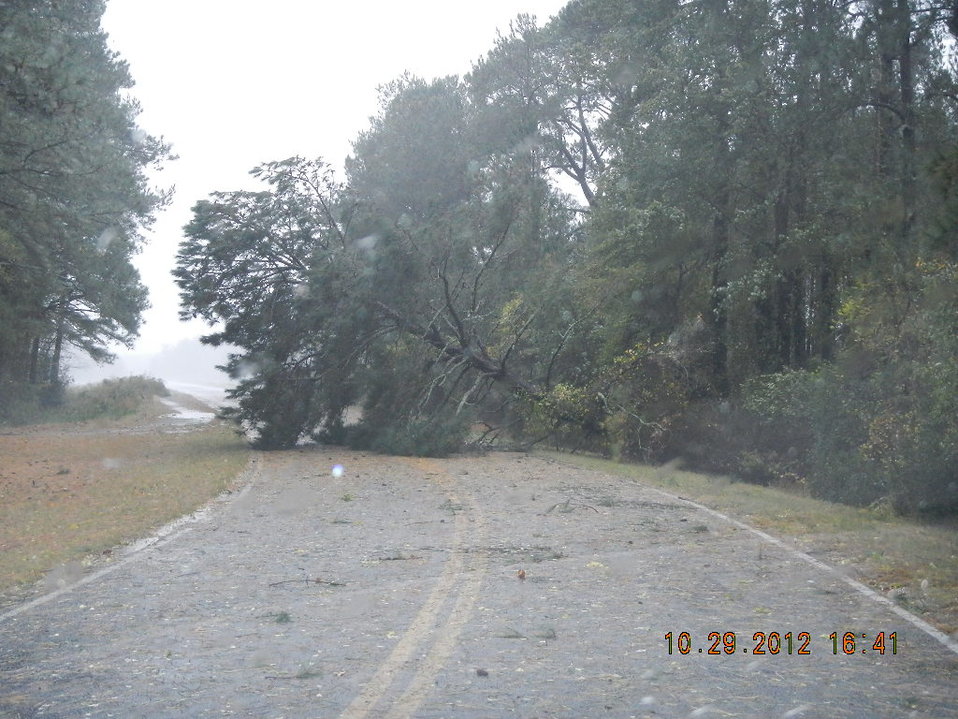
Downed tree at Chincoteague National Wildlife Refuge (VA)

Chincoteague National Wildlife Refuge sustained downed trees during Hurricane Sandy.